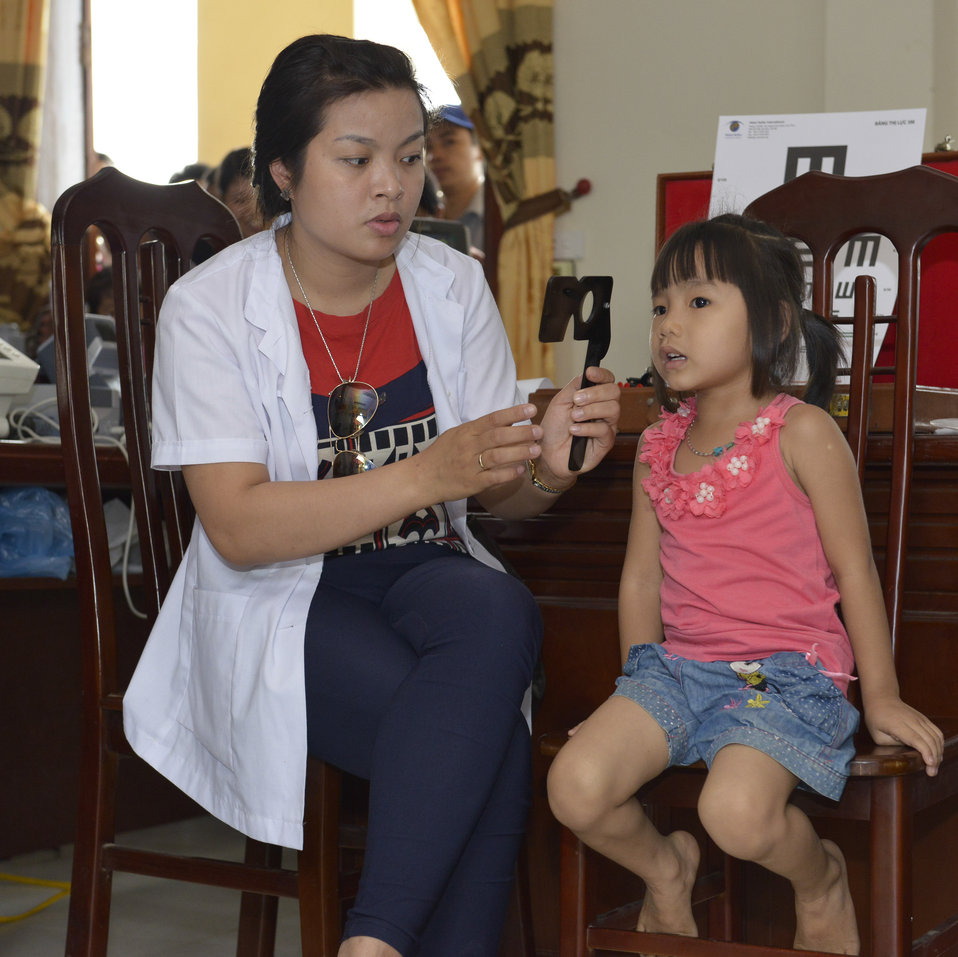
Eye screening for kindergarten children in Quoc Oai district of Hanoi

Quoc Oai, Hanoi. May 31, 2014.